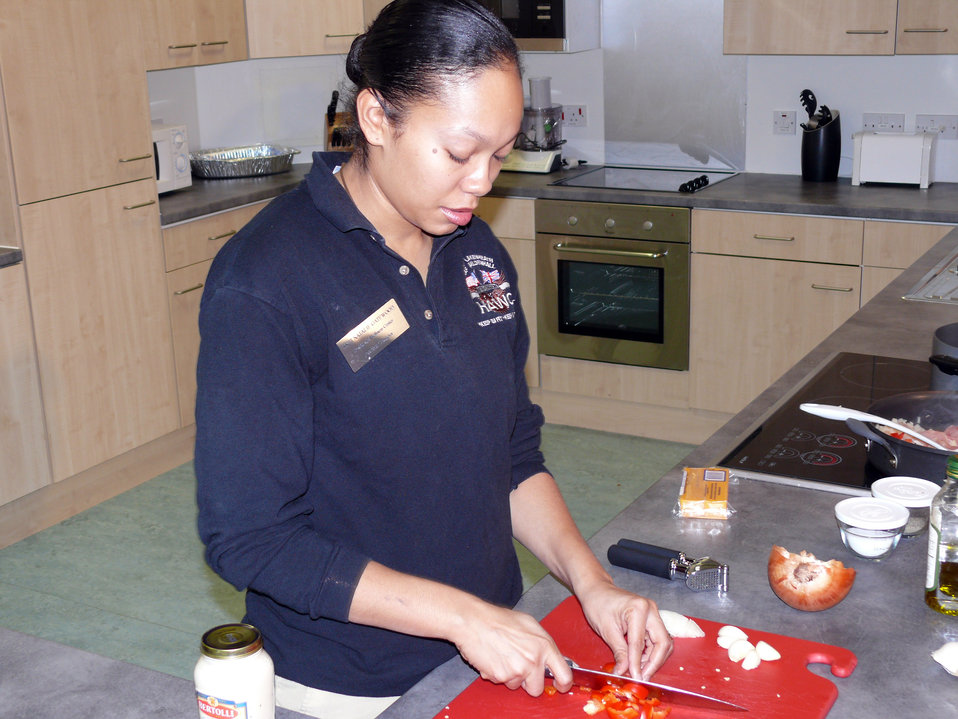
Lakenheath Airmen learning to cook healthier

Staff Sgt. Natalie Gatewood chops a red pepper to add to the recipe she's preparing for a Body Composition Improvement Program healthy cooking class Feb. 16 at Royal Air Force Lakenheath, England. Airmen may choose to attend the cooking class as their monthly BCIP follow-up, instead of a typical nutrition briefing. Sergeant Gatewood developed the class due to the need of helping develop better cooking habits for the people on the program. She is the RAF Lakenheath nutrition counselor.